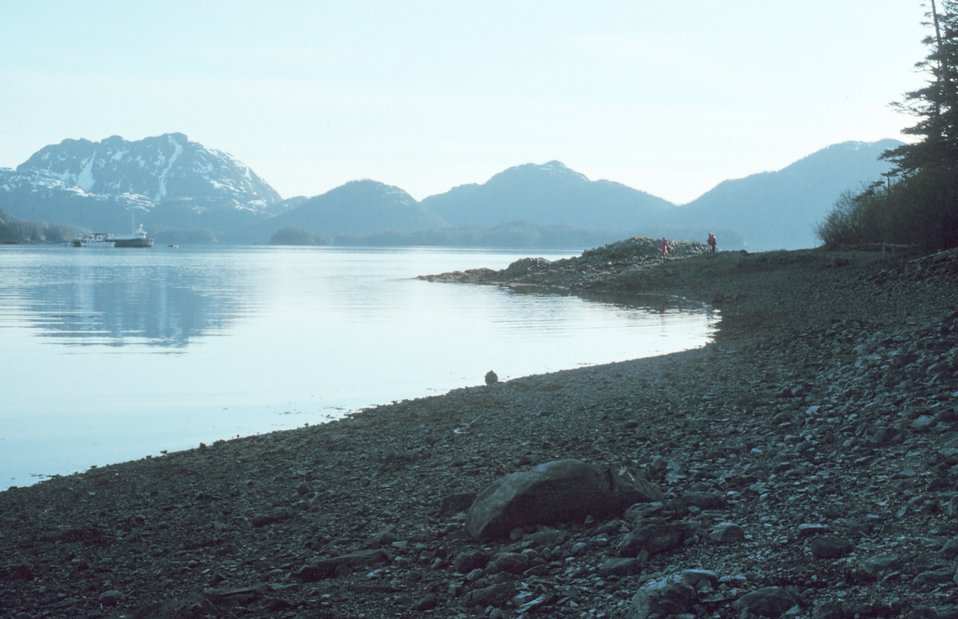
EXXON remedial vessels still working on beaches one year after the EXXON VALDEZ disaster.